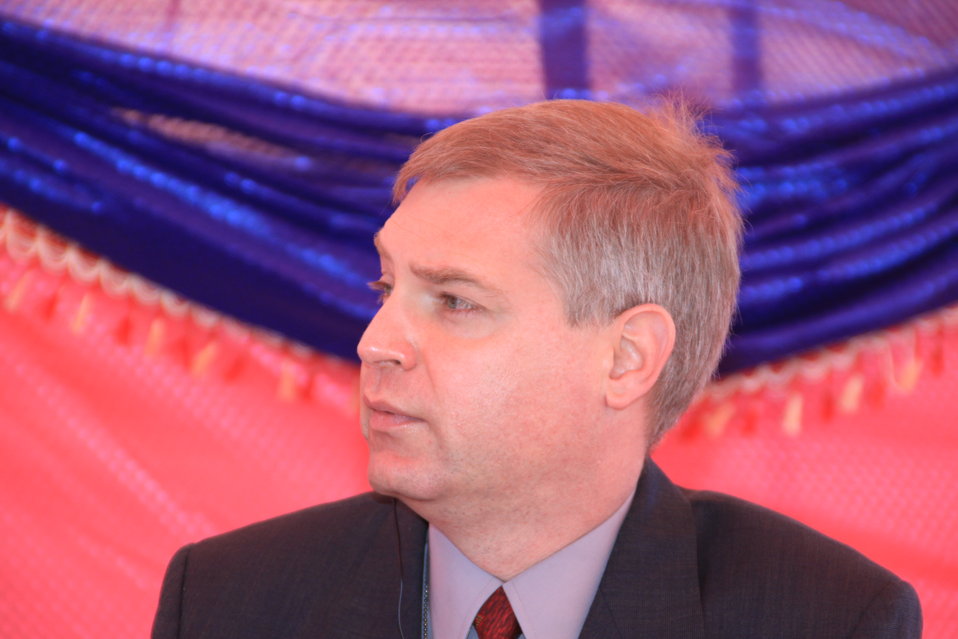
AVIPA Plus Wheat Seed Distribution 101005

US Ambassador Karl Eikenberry and USAID Acting Mission Director Kevin Brownawell joined the Minister of Agriculture, Irrigation and Livestock, H.E. Minister Mohammed Rahimi in signing a Memorandum of Understanding and distributing vouchers to area farmers for wheat and fertilizer.

US Ambassador Karl Eikenberry and USAID Acting Mission Director Kevin Brownawell joined the Minister of Agriculture, Irrigation and Livestock, H.E. Minister Mohammed Rahimi in signing a Memorandum of Understanding and distributing vouchers to area farmers for wheat and fertilizer.